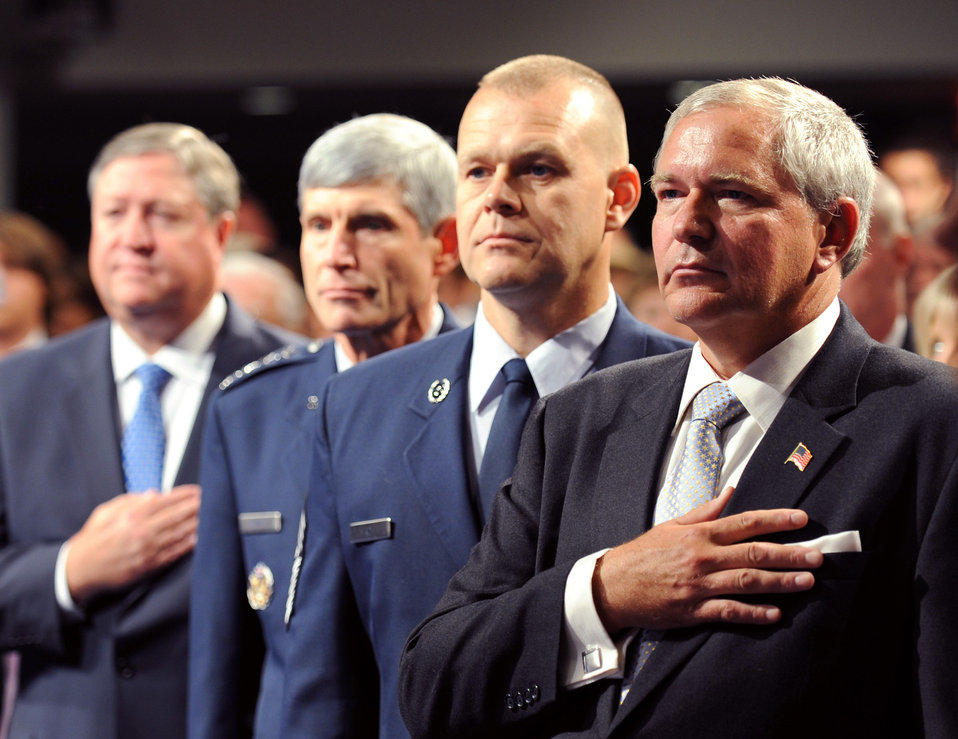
Hall of Heroes

(From left) Secretary of the Air Force Michael Donley, Air Force Chief of Staff Gen. Norton Schwartz, Chief Master Sgt. of the Air Force James A. Roy and Cory Etchberger, son of Medal of Honor recipient Chief Master Sgt. Richard L. Etchberger, stand for the playing of the national anthem during the Pentagon Hall of Heroes induction ceremony honoring Chief Etchberger Sept. 22, 2010, in the Pentagon.